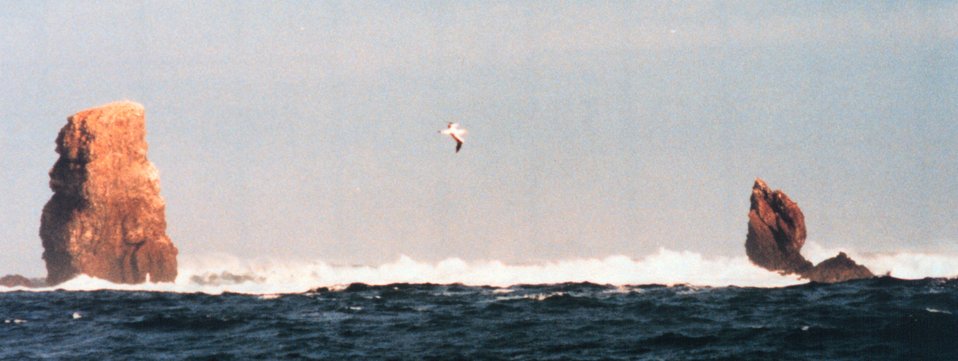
Alijos Rocks in the middle of nowhere off the Mexican Coast.